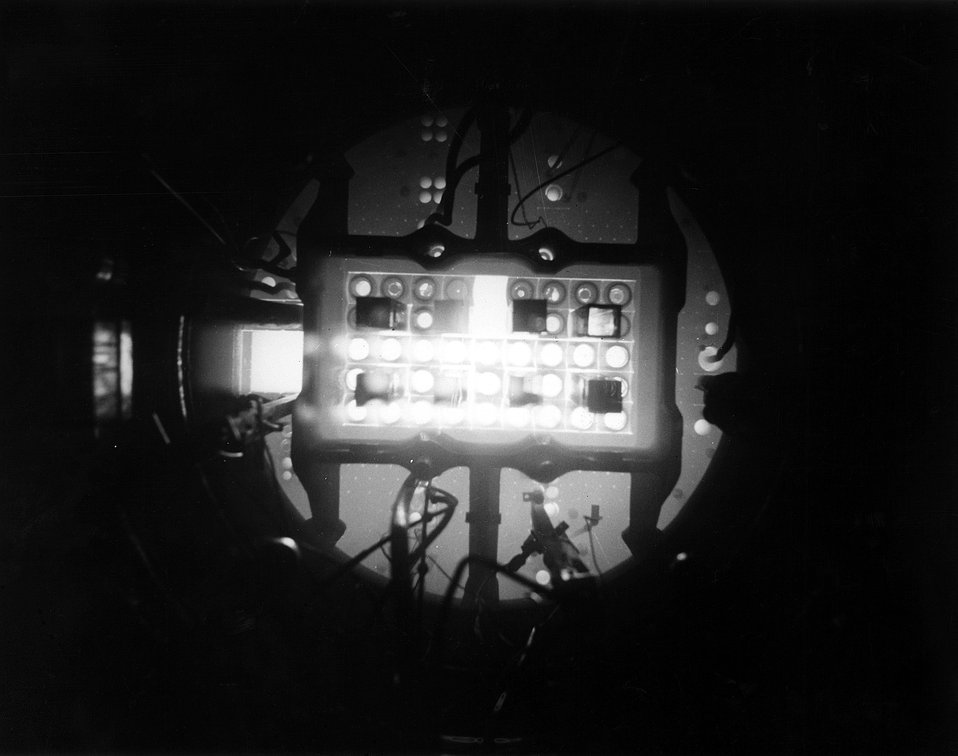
View down through 20 feet of water into the tank of Materials Testing Reactor at the Atomic Energy Commission's National Reactor Station. Circa 1955.